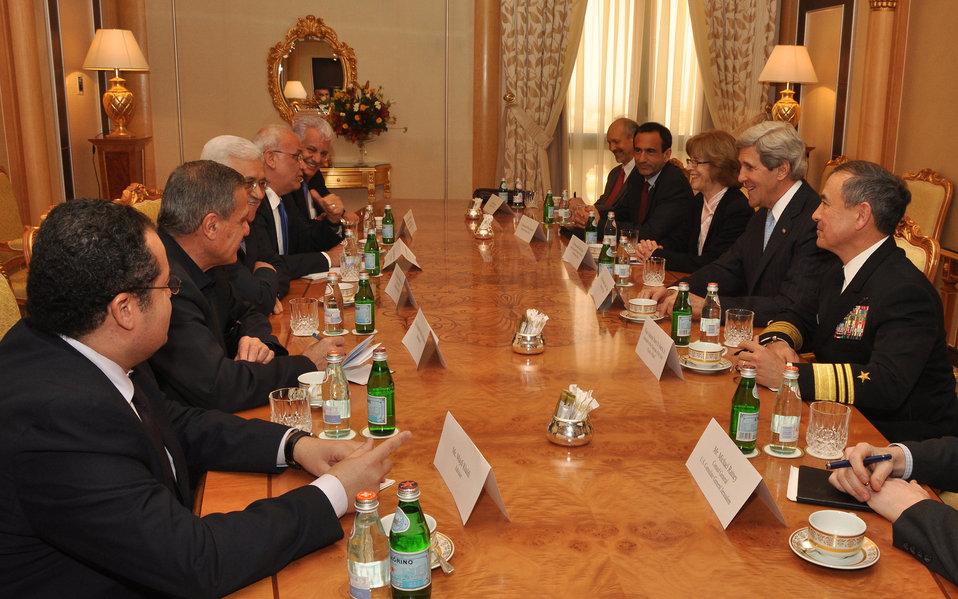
Secretary Kerry Meets With Palestinian Authority President Mahmoud Abbas

U.S. Secretary of State John Kerry meets with Palestinian Authority President Mahmoud Abbas in Riyadh, Saudi Arabia, on March 4, 2013.